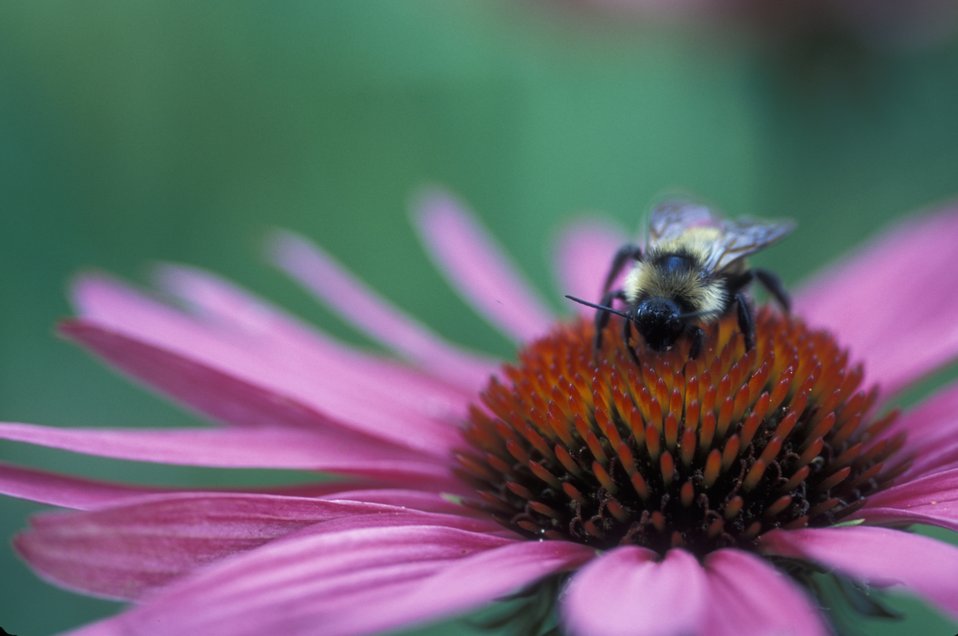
Bee on Echinacea Flower

A close-up view of a bee on a purple echinacea flower.